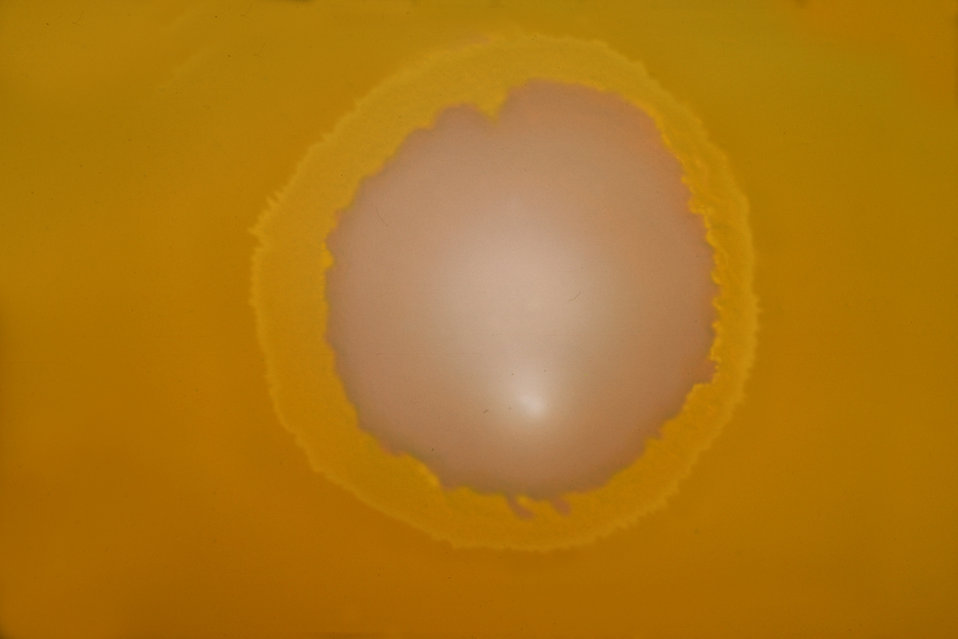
A BHI agar plate culture of Actinomyces sp., strain X-573, at 10 days.